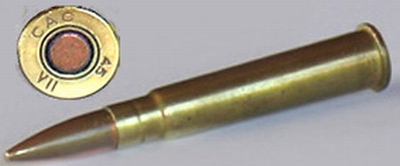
A .303 British cartridge. .303 inch centrefire, rimmed ammunition. Rimmed, centerfire .303 in cartridge from WWII. Manufactured by Colonial Ammunition Company, New Zealand in 1945. Standard Mk VII .303 inch cartridge for Lee-Enfield rifle. Rimmed, centrefire .303 inch (7.7 mm) cartridge from WWII. Military .303 British 174g FMJ cartridge. Français†: Une cartouche de .303. 日本語: 一般にリー・エンフィールド小銃に用いられる' Mk. VII ' というタイプの.303ブリティッシュ弾 である。. Русский: .303 British — английский винтовочный, унитарный патрон. Он был основным патроном британской армии с 1889. .303 British- английский винтовочный, унитарный патрон. (.303 inch). Türkçe: .303 inch (7.7 mm) mermi IIDS. Dansk: .303ammunition.jpeg. Tiếng Việt: Một viên đạn súng cỡ 0.303. đạn súng cỡ 0.303inch của Anh.